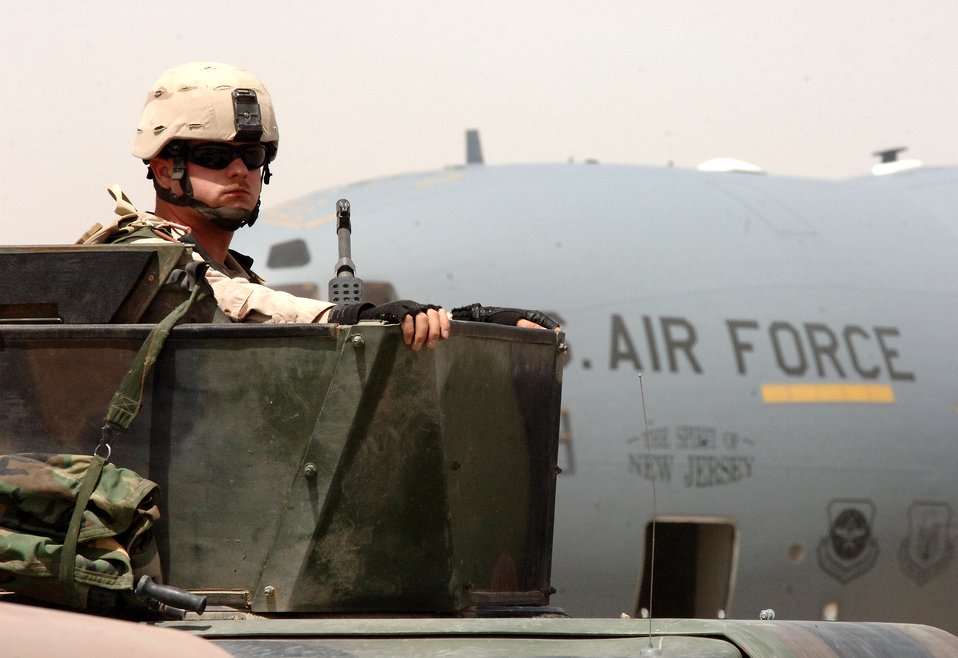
Keeping the base safe

Senior Airman Jonathon Ray mans the turret atop a Humvee during a Army and Air Force joint operation in support of a presidential security mission in Baghdad on June 13, 2006. Airman Ray is assigned to the 447th Air Expeditionary Group and is deployed from the Texas Air National Guard's 147th Fighter Wing at Ellington Field in Houston.